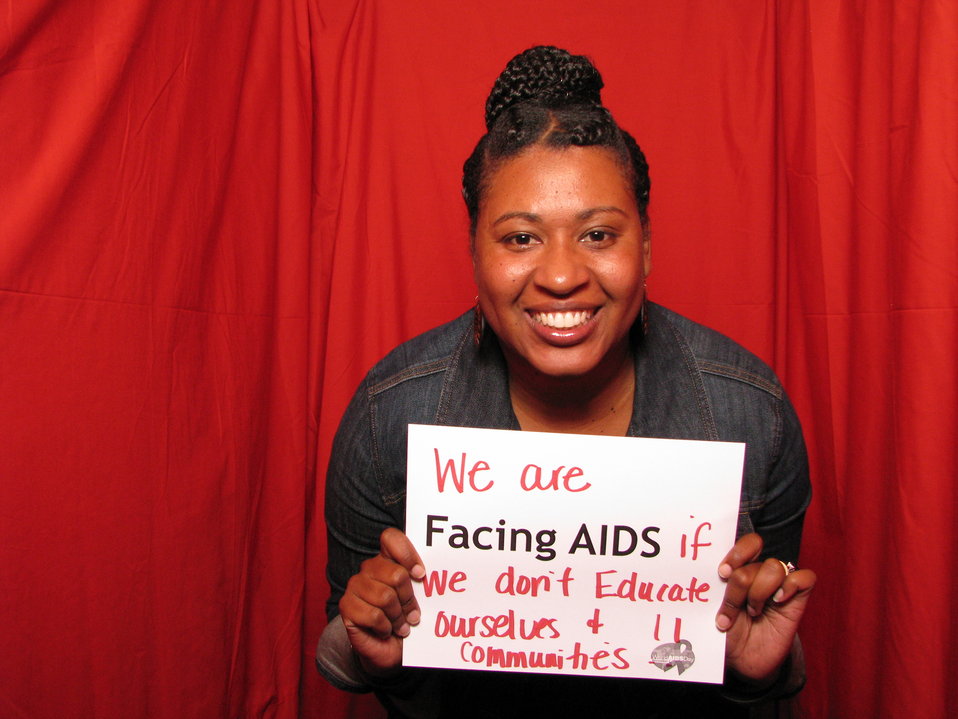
We are FACING AIDS if we don't educate ourselves and communities!!!

From the AIDS.gov photo booth at the U.S. Conference on AIDS, September 2010 (Orlando, FL).